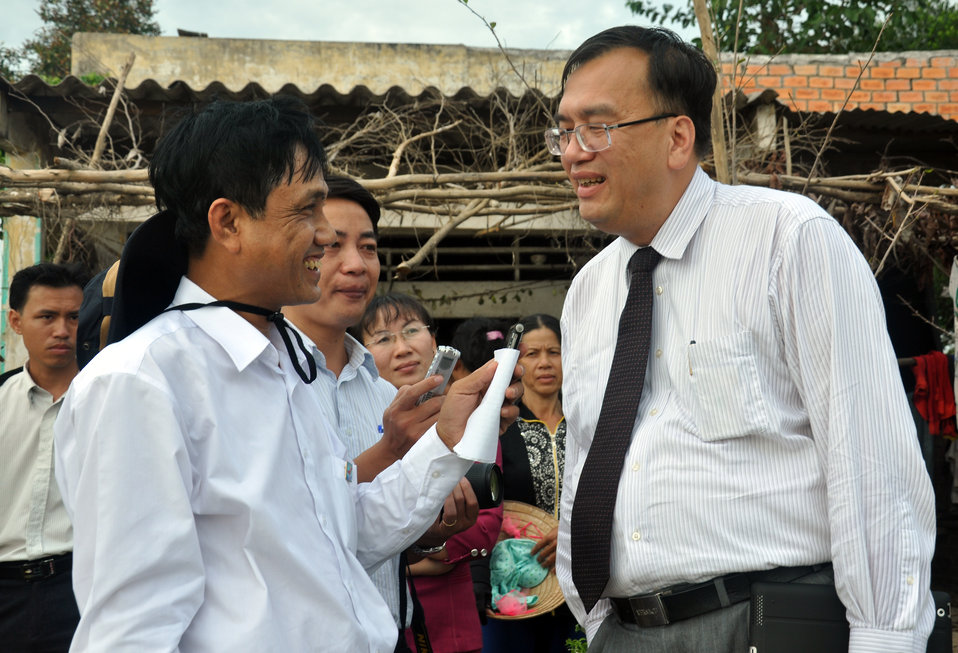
U.S. Consul General Le An visits USAID beneficiaries

USAID site visit to Long An Province to visit flood relief beneficiaries